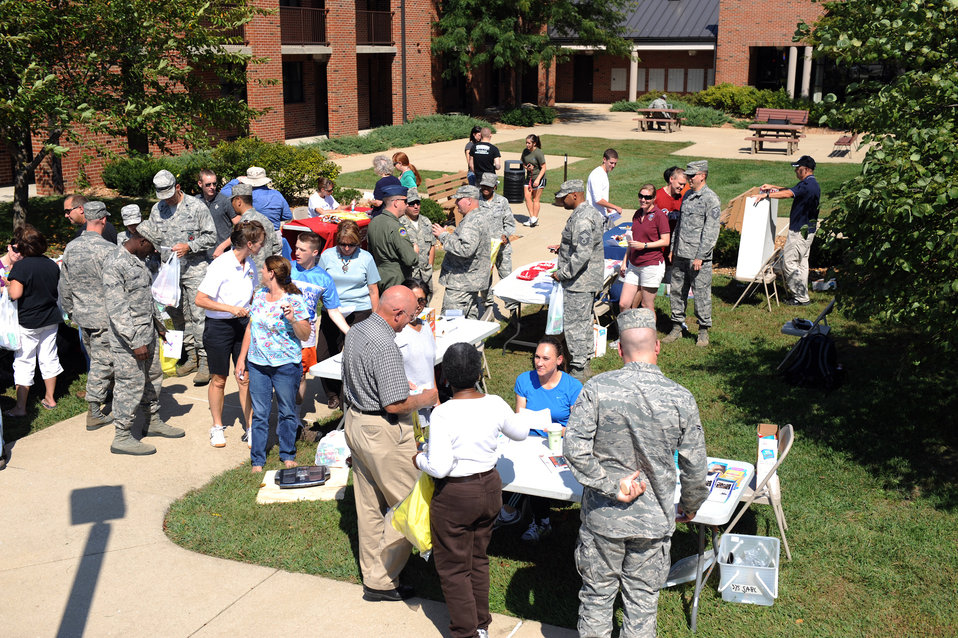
Scott AFB hosts suicide prevention day

Airmen and their families visit booths during Suicide Prevention Field Day Sept. 23, 2010, at Scott Air Force Base, Ill. Various base agencies hosted the event that focused on the ability of one person to save another's life simply by being there.